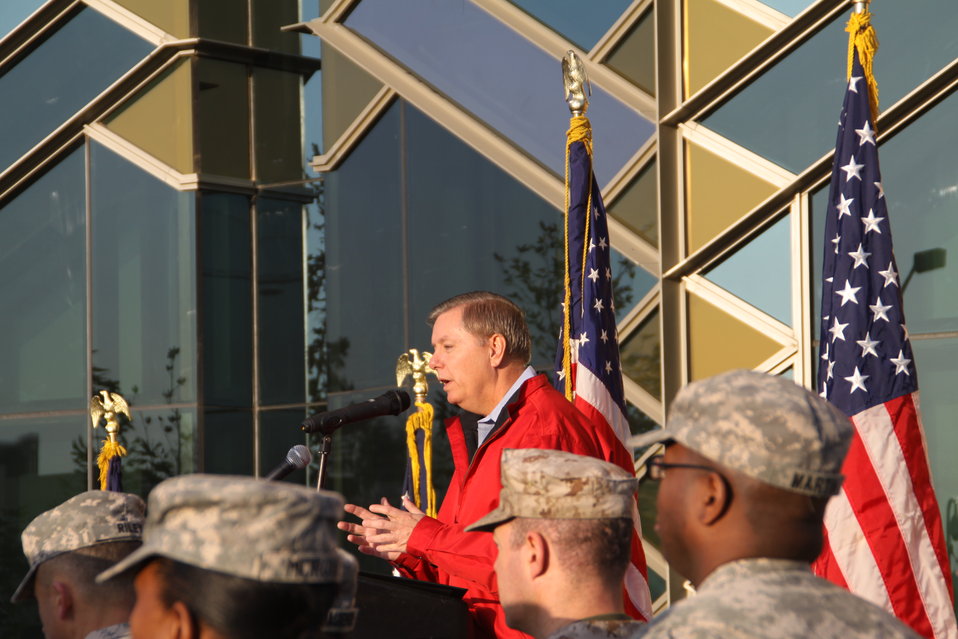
Senator Graham